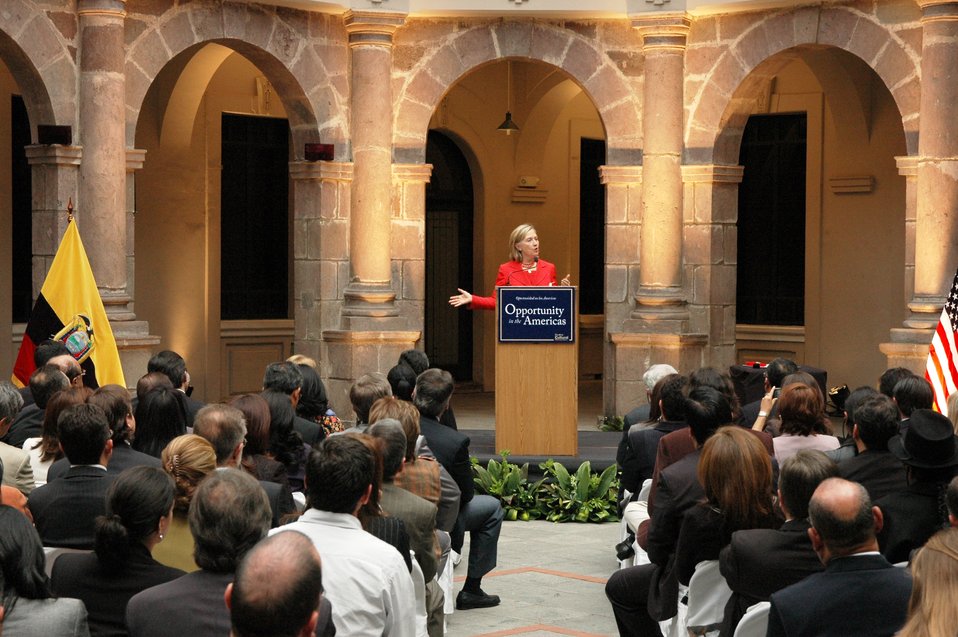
Secretary Clinton Delivers 'Opportunity in the Americas' Speech

U.S. Secretary of State Hillary Rodham Clinton delivers a policy address, 'Opportunity in the Americas,' in Quito, Ecuador, on June 8, 2010.